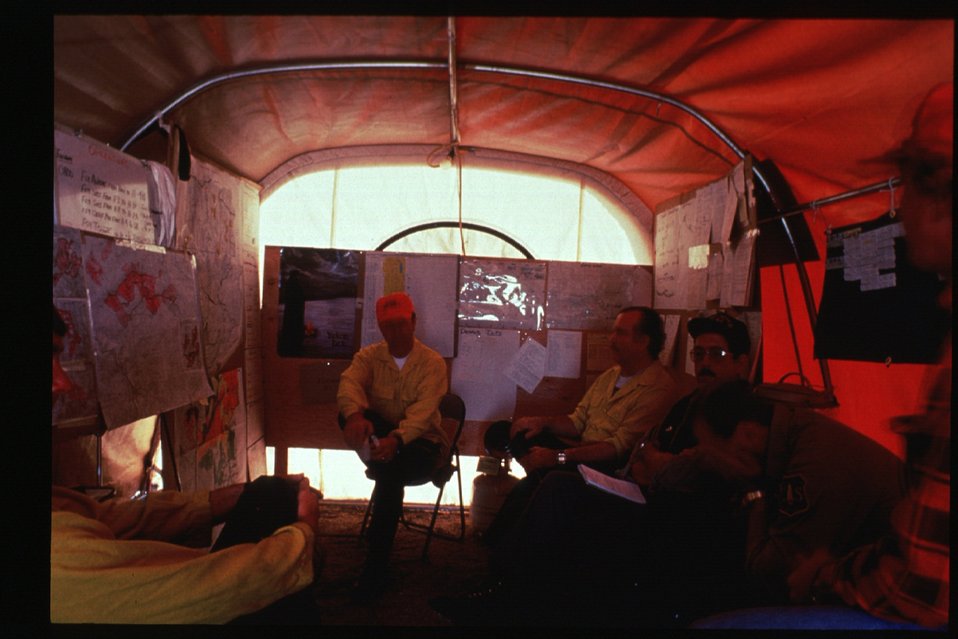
Boise Foothills Fire Danskin Mountains and South Fork of Boise River Fire Boss Four River Field Office LSRD Lower Snake River District